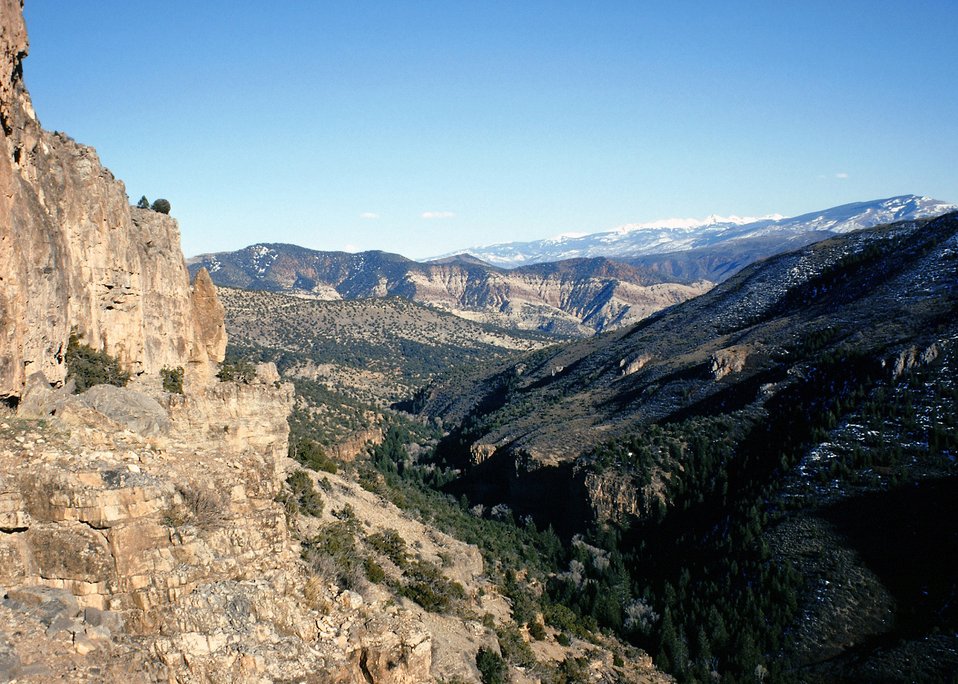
Pristine and scenic limestone canyon descending from the Flat tops